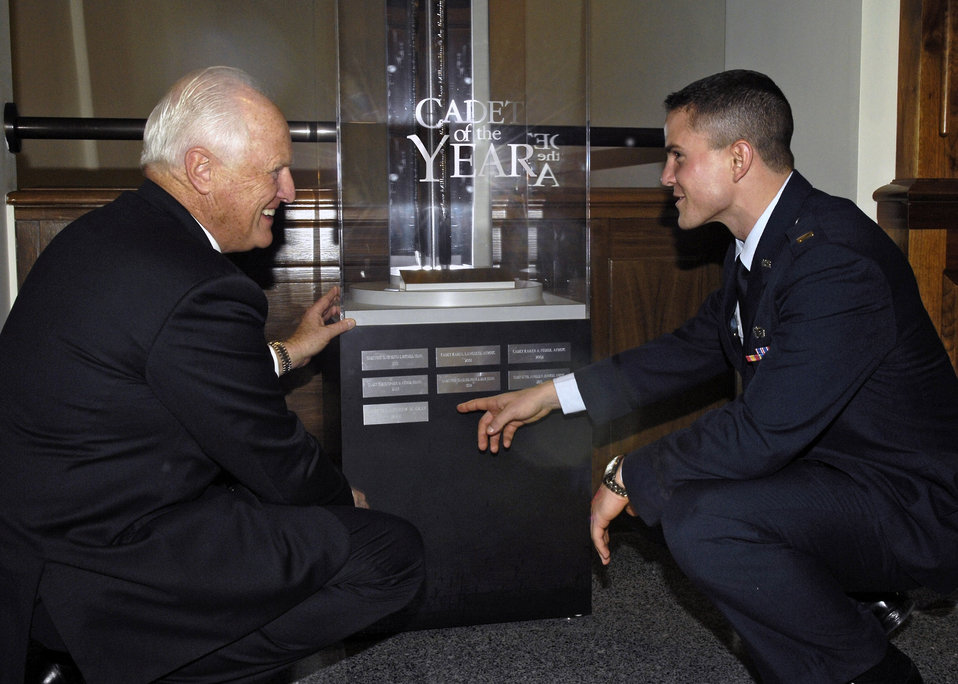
Cadet of the Year

Winston S. Churchill, grandson of former British Prime Minister Winston Churchill, and 2nd Lt. Brandon T. Dues, a graduate of the Air Force Academy last May, admire the